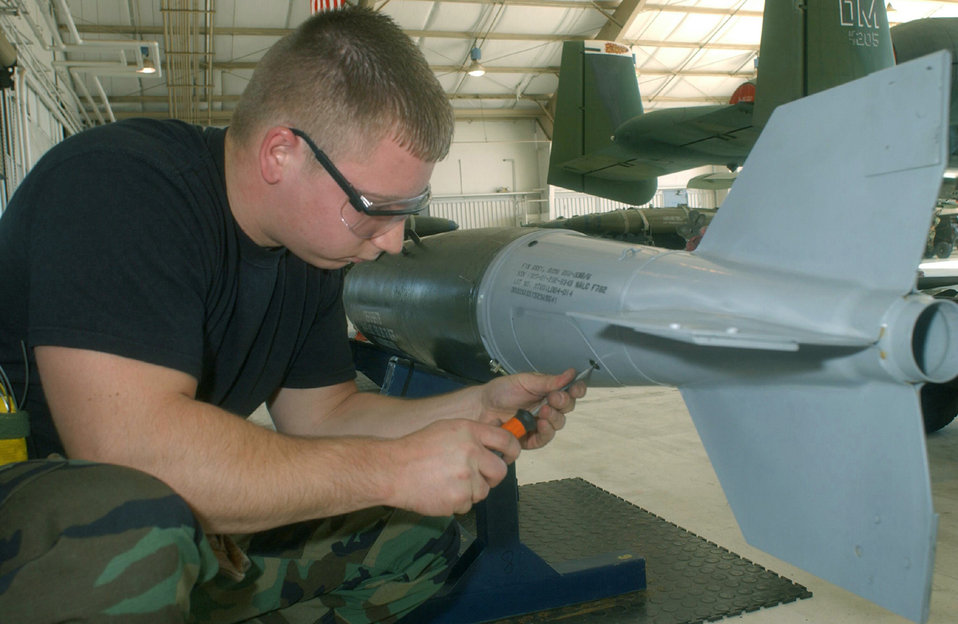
Load lovers

DAVIS-MONTHAN AIR FORCE BASE, Ariz. -- Airman 1st Class Steven Dennison screws an MK-82 bomb panel into place after putting a fuse into it. The fuse enables the bomb to explode. Participating in a weapons load crew competition here, Airman Dennison is assigned to the 355th Aircraft Maintenance Squadron.